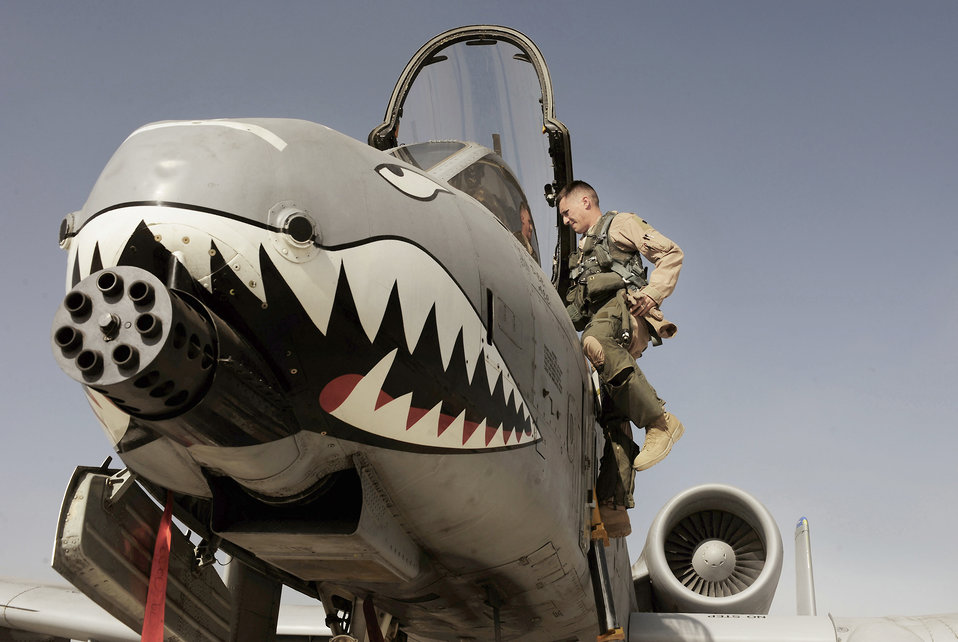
A-10C Thunderbolt II maintenance inspection

Maj. Loren Coulter exits an A-10C Thunderbolt II at Kandahar Airfield, Afghanistan, Jan. 11, 2011. The 75th Expeditionary Fighter Squadron moved their assets to the other side of the flightline, marking the first of many moves toward consolidating the 451st Air Expeditionary Wing's missions. Major Coulter is an A-10 pilot assigned to the 75th EFS.